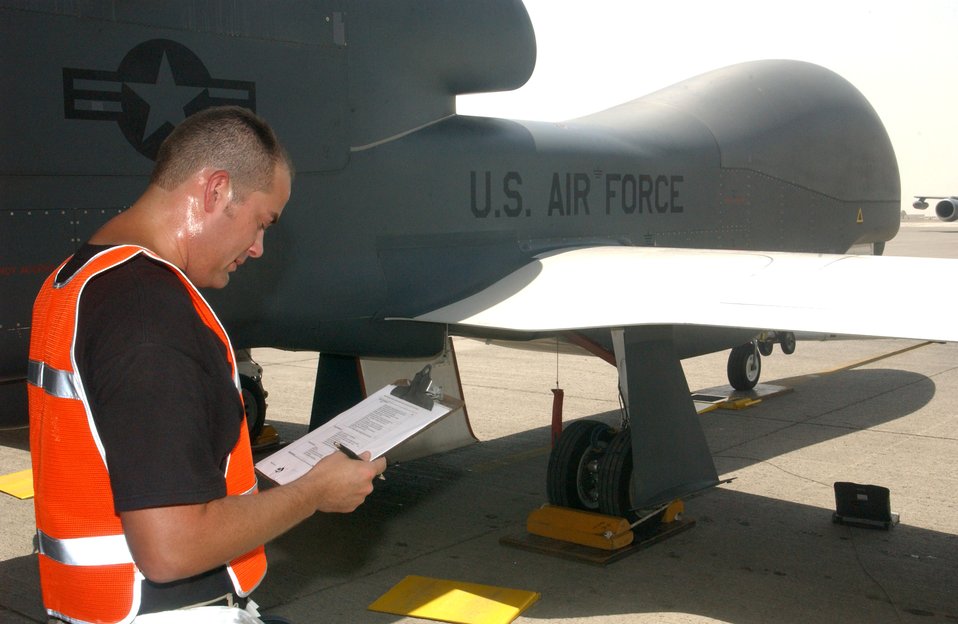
Global Hawk, global mission

Staff Sgt. Michael Delaune reviews a post-flight checklist for the Global Hawk unmanned aerial vehicle following a mission Oct. 3 at a deployed location in Southwest Asia. The Global Hawk flies missions in support of operations Iraqi Freedom and Enduring Freedom from this deployed location. Sergeant Delaune is assigned to the 380th Expeditionary Maintenance Group.